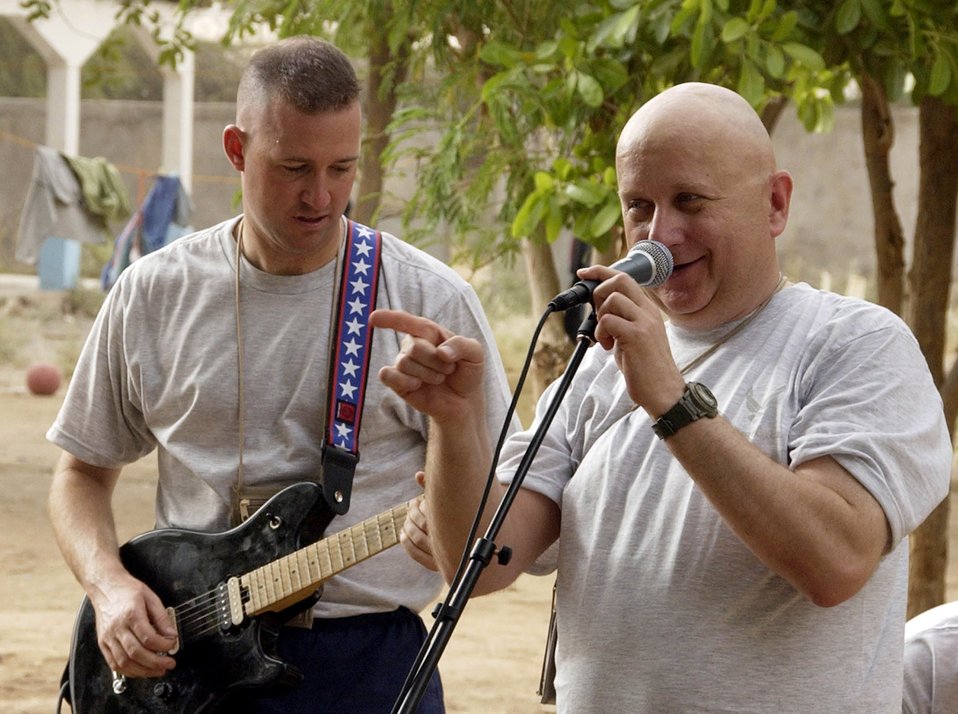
Band Brothers: Family of musicians rock AOR

Master Sgt. James Filipek sings